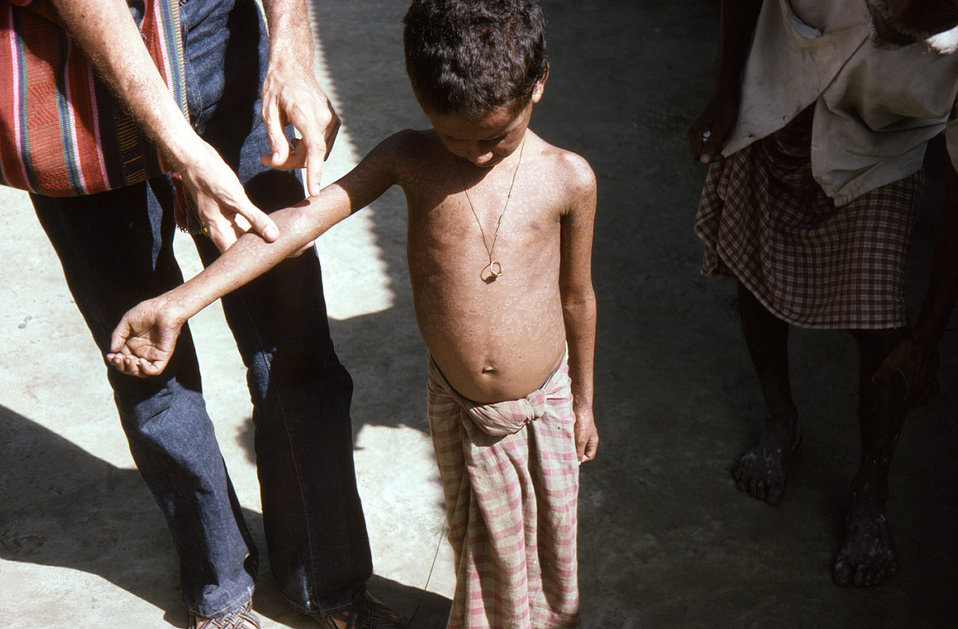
Photographed in the north-eastern Bangladesh District of Sylhet, this child, who was on his way to the United Kingdom, was found to be running a high fever. He was carrying what turned out to be a forged Smallpox Vaccination Certificate, and a visa issued by the British High Commission. Hence this young boy was labeled as, "The High Commission Case". His sister, who was also a smallpox patient, can be seen in PHIL 12307.